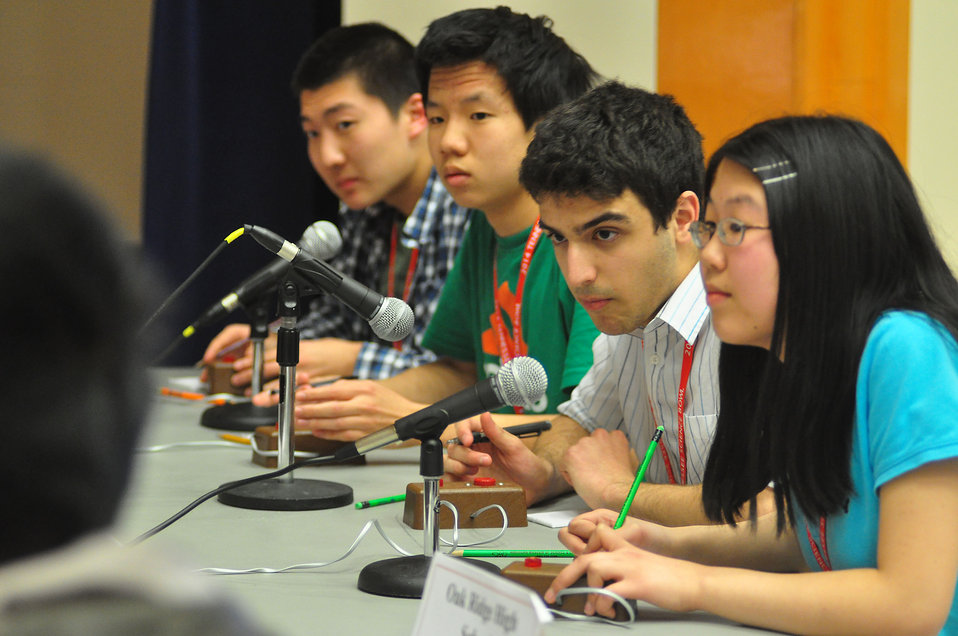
Oak Ridge 2014 TN DOE Science Bowl

DOE photo Lynn Freeny 2-22-2014 Pellissippi State Blount Campus